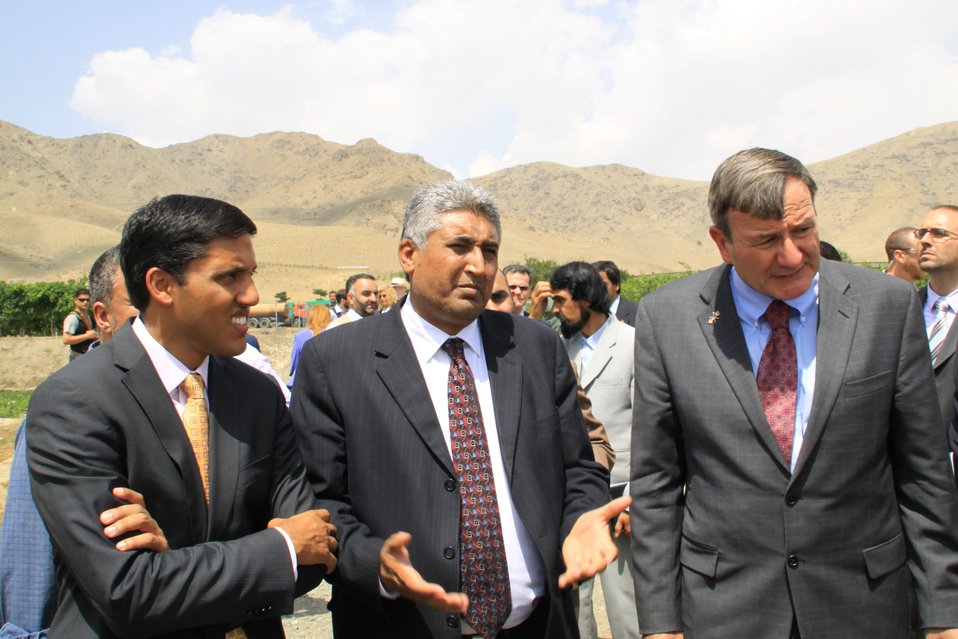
Badam Bagh Farm